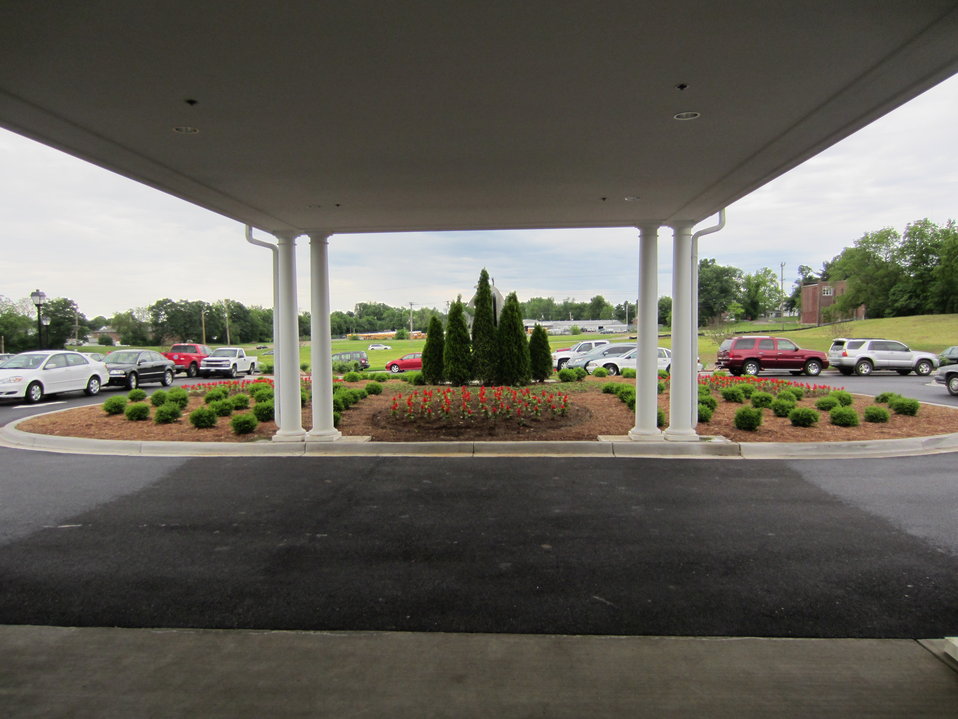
Daisy Hill 6

The new Daisy Hill Assisted Living facility in Versailles, KY provides a bright, welcoming setting for senior citizens. The building was funded with a U.S. Department of Agriculture (USDA) Rural Development (RD) Business and Industry Guarantee (BIG) Loan program.